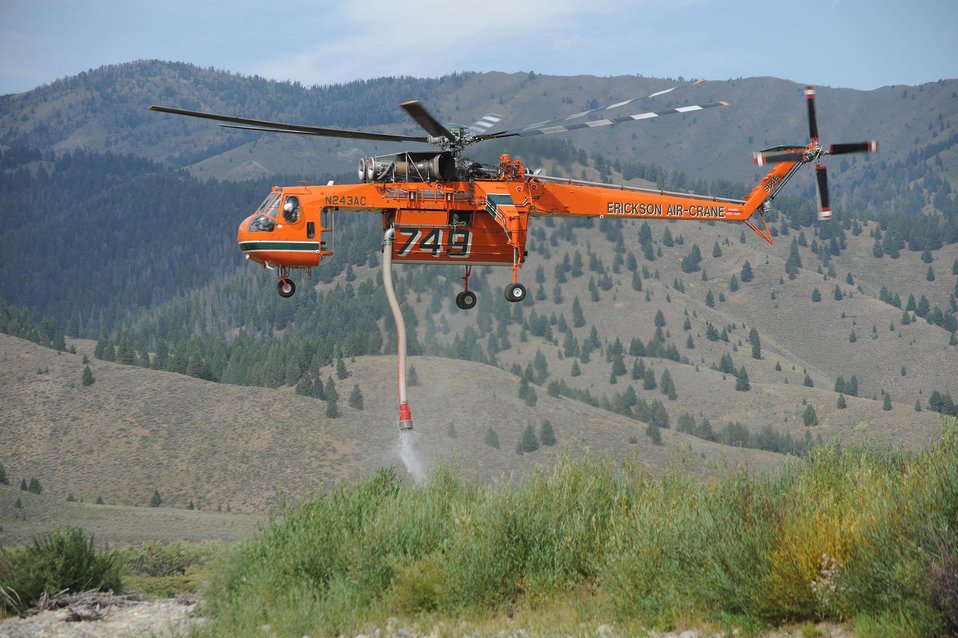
A skycrane working on the Beaver Creek Fire. The Beaver Creek Fire in the Sawtooth National Forest near Hailey, ID began on Aug. 7 2013 by lighting has consumed approximately 111,490 acres and is 95% contained.